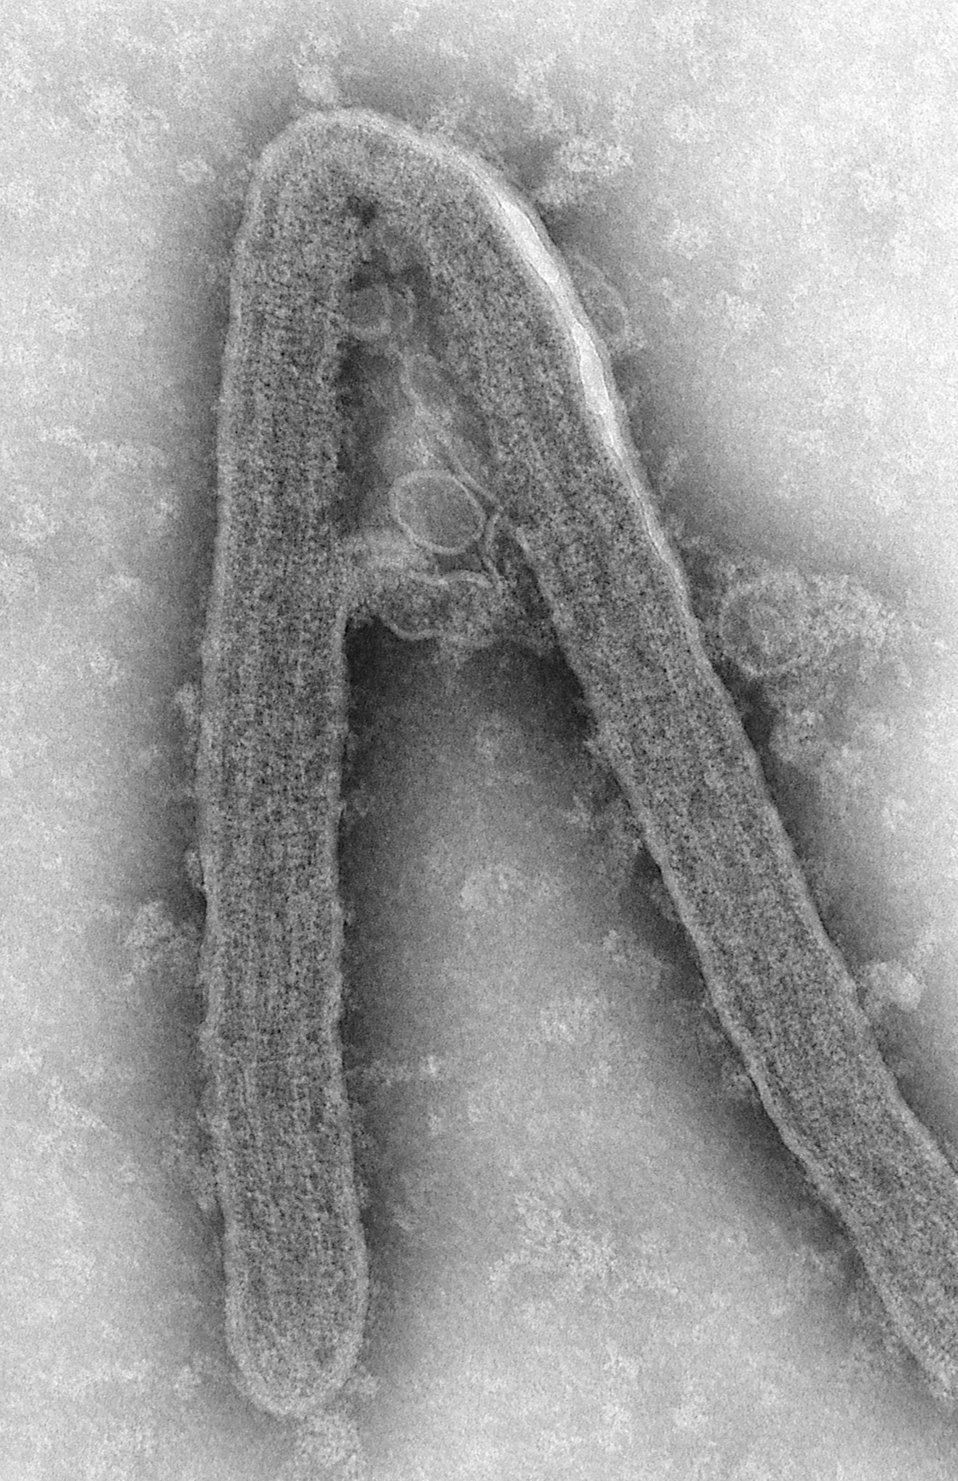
This negative stained transmission electron micrograph (TEM), captured by F.A. Murphy in 1968, depicts a Marburg virus virion, which had been grown in an environment of tissue culture cells. Marburg hemorrhagic fever is a rare, severe type of hemorrhagic fever which affects both humans and non-human primates. Caused by a genetically unique zoonotic (that is, animal-borne) RNA virus of the filovirus family, its recognition led to the creation of this virus family. The four species of Ebola virus are the only other known members of the filovirus family. See PHIL 10813 for a colorized version of this image.